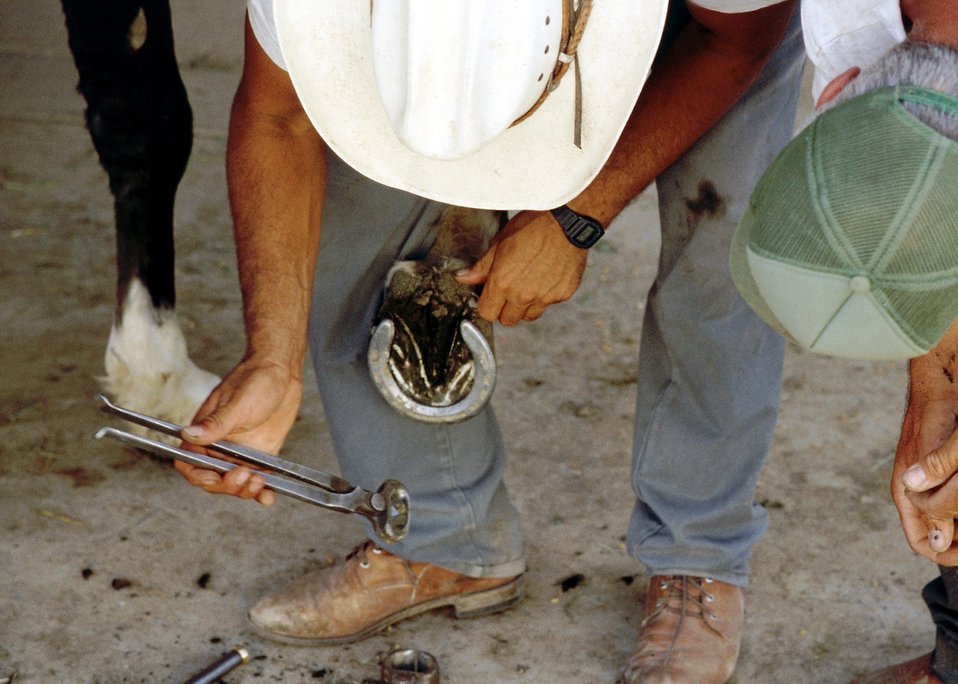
Wild Horse (shoeing)